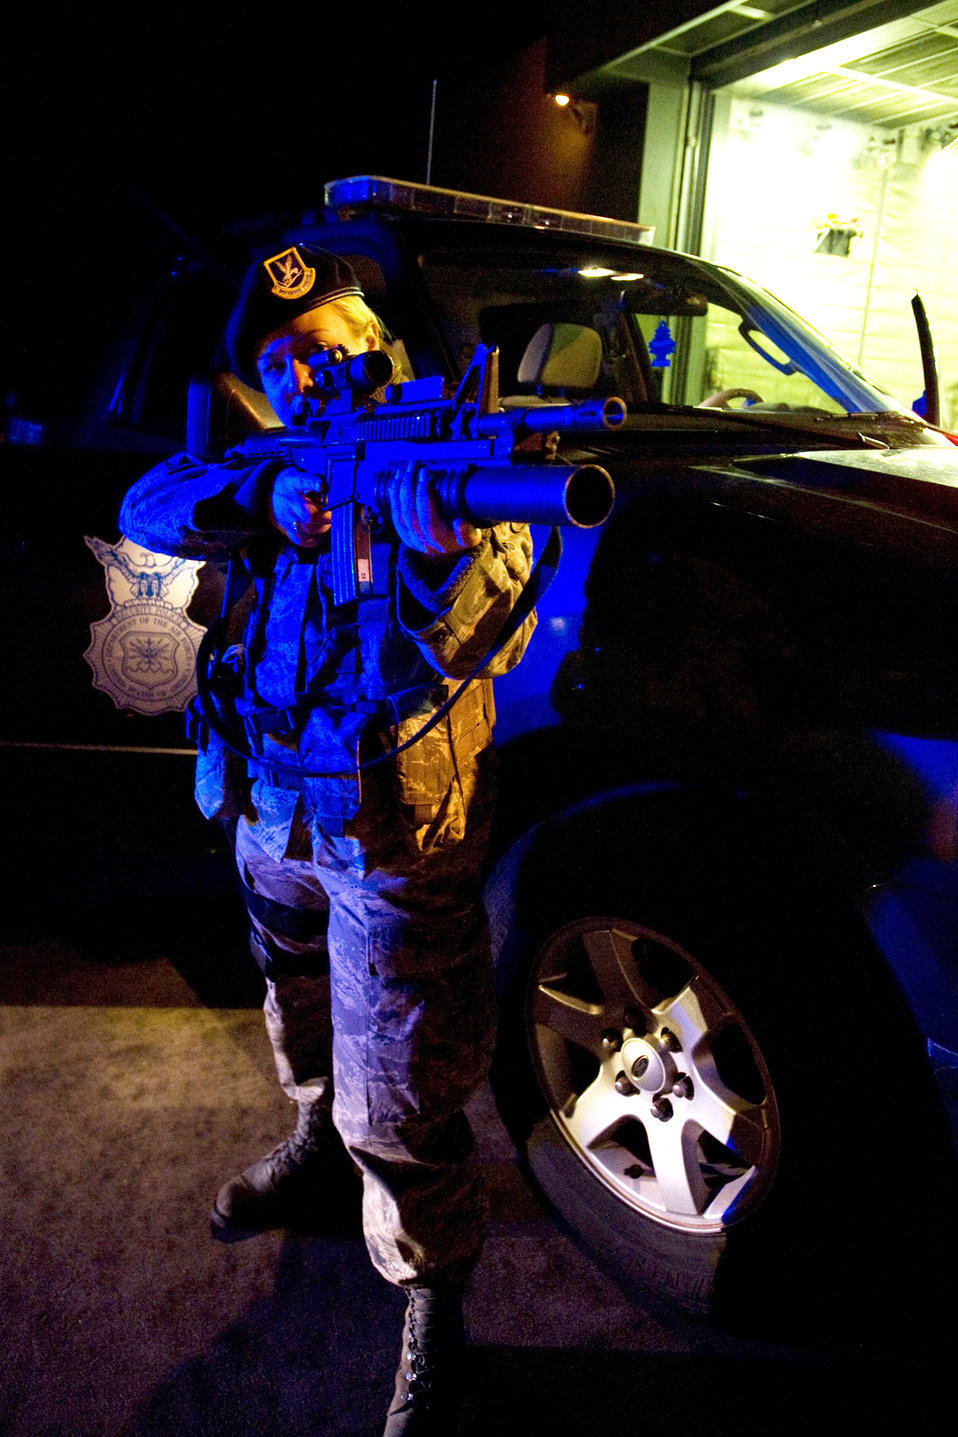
Feel lucky?

Airman 1st Class Angela Ingraffia, with the 35th Security Forces Squadron, prepares to engage a